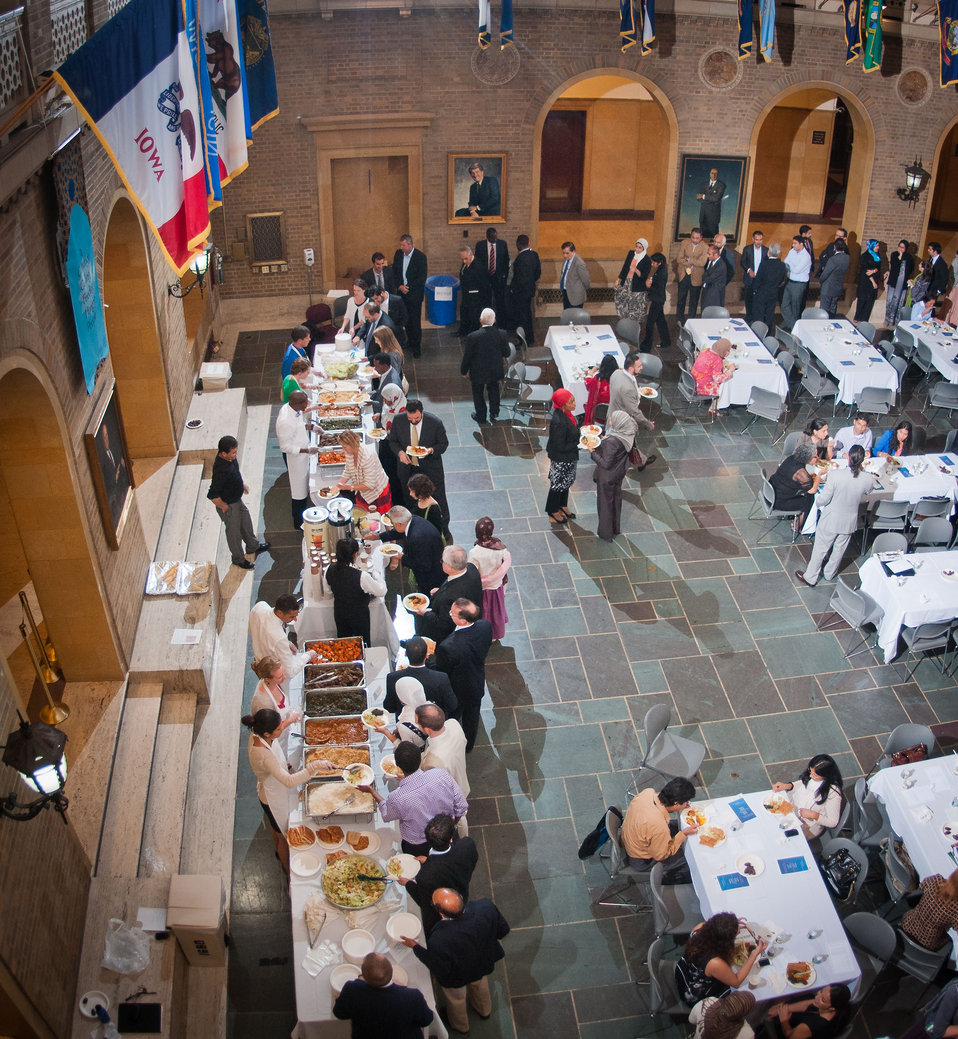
Long, fast lines moved through the buffet, after sunset, during the Iftar celebration, co-sponsored by the U.S. Department of Agriculture, U.S. Agency for International Development (USAID) and Islamic Relief USA, on Tuesday, August 7, 2012, at the USDA Whitten Building, in Washington, D.C. Ramadan is the month of fasting, intensive prayer, sacrifice and worship for Muslims around the world. Throughout this month, Muslims fast during the day, abstaining from consuming food from dawn to dusk and using this time to purify spiritually. Fasting reminds Muslims of the poverty and hunger suffered by many in the United States and worldwide. It is a connection with those who are hungry not through devotion, but through the many global factors that lead to hunger and famine. Iftar is the meal at which Muslims break their fast at sunset, usually by eating dates, according to the Prophetic tradition.